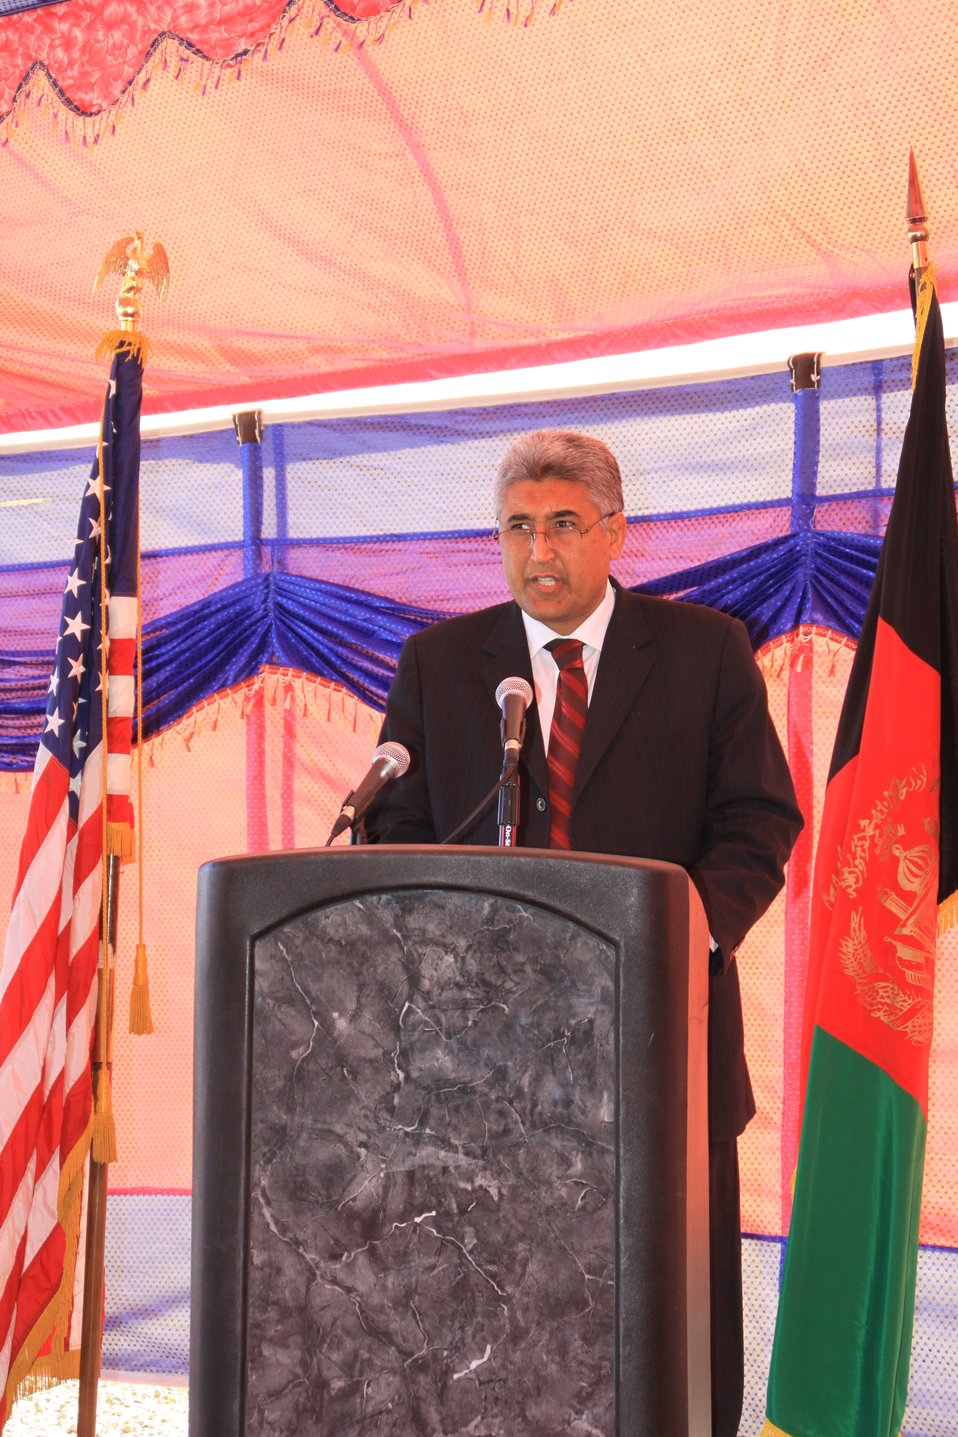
AVIPA Plus Wheat Seed Distribution 101005